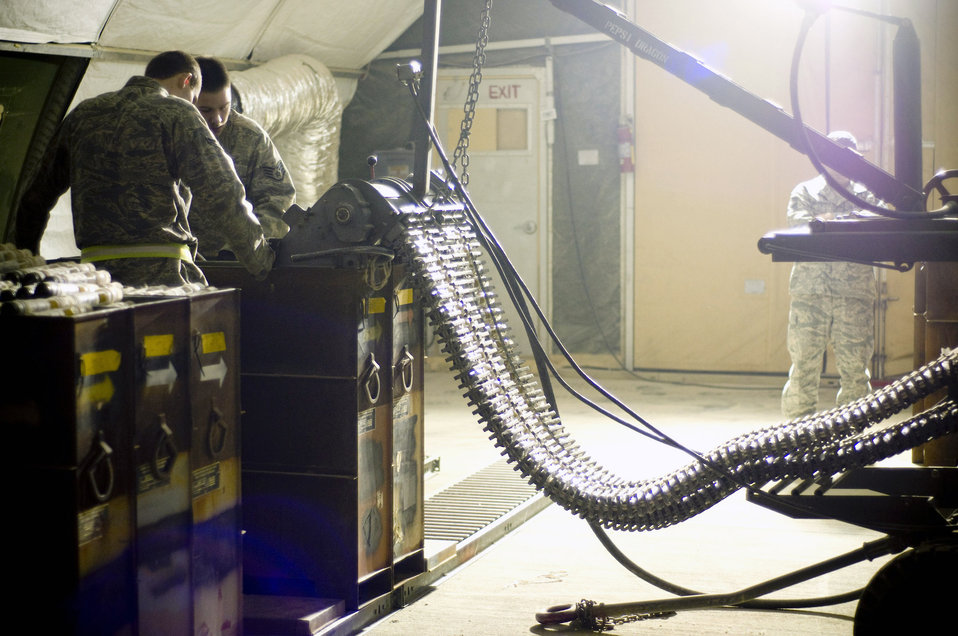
Feeding the Thunderbolt II

Airmen of the 455th Expeditionary Maintenance Squadron Ammo Flight process and inspect 30mm rounds in a GFU-7